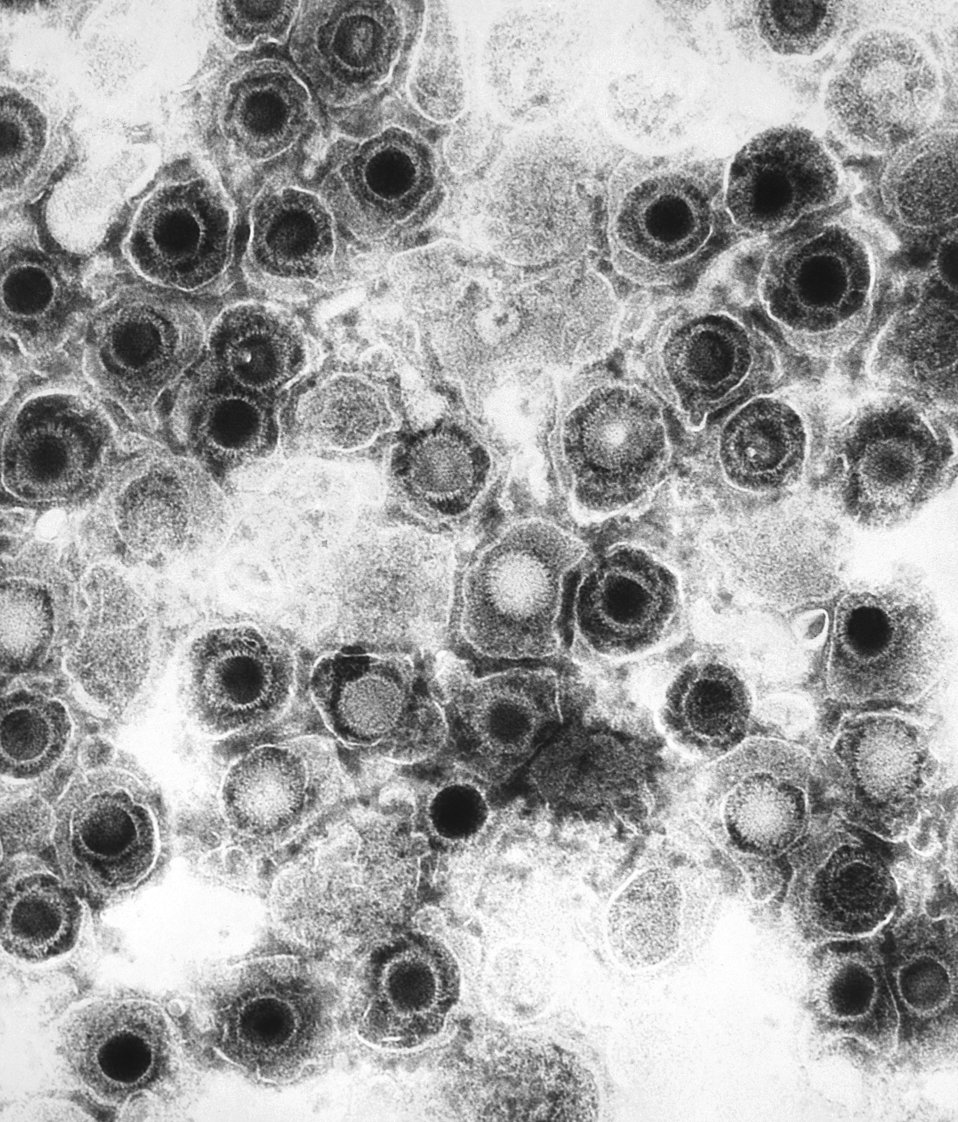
This negatively-stained transmission electron micrograph (TEM) revealed the presence of numerous herpes simplex virions, members of the Herpesviridae virus family. There are two strains of the herpes simplex virus, HSV-1, which is responsible for cold sores, and HSV-2, which is responsible for genital herpes. At the core of its icosahedral proteinaceous capsid, the HSV contains a double-stranded DNA linear genome.